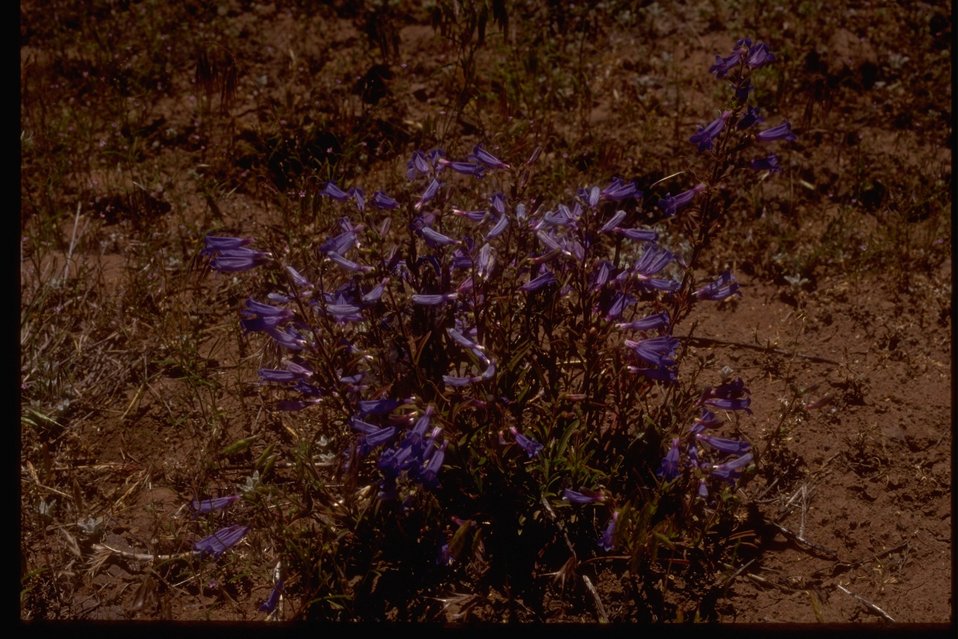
Purple Sage found near Steens Mountain.